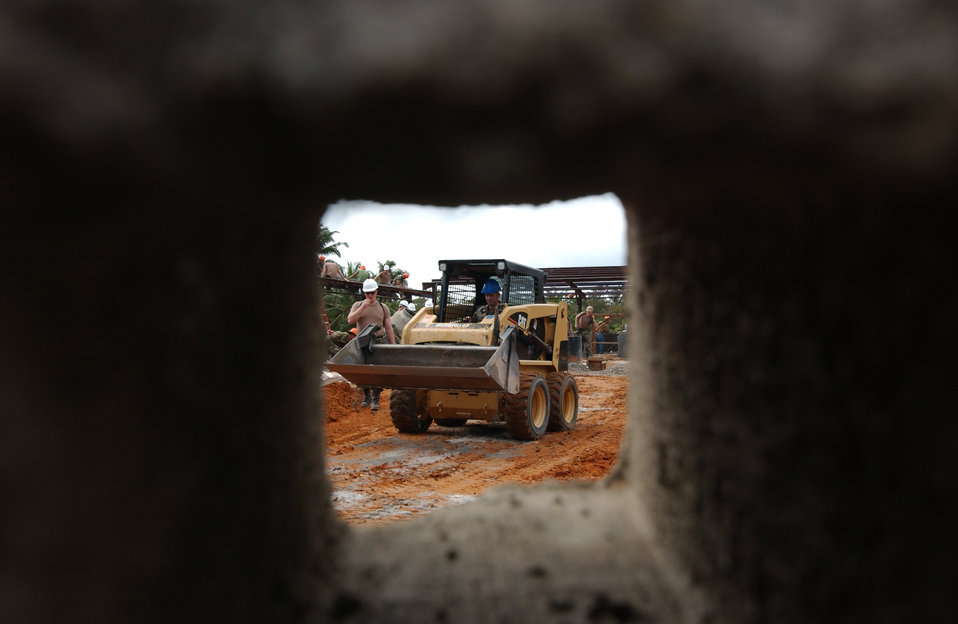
Balikatan 2005

LUISIANA, Laguna -- Capt. Andrew Nathan operates a skid steer loader at the San Buenaventura School Project site Feb. 21 during Balikatan 2005. Balikatan is a yearly excercise to improve humanitarian assistance, disaster relief and to promote interoperability between the Armed Forces of the Philippines and U.S. Forces. Captain Nathan is a member of the North Dakota Army National Guard's 142nd Engineer Battalion.